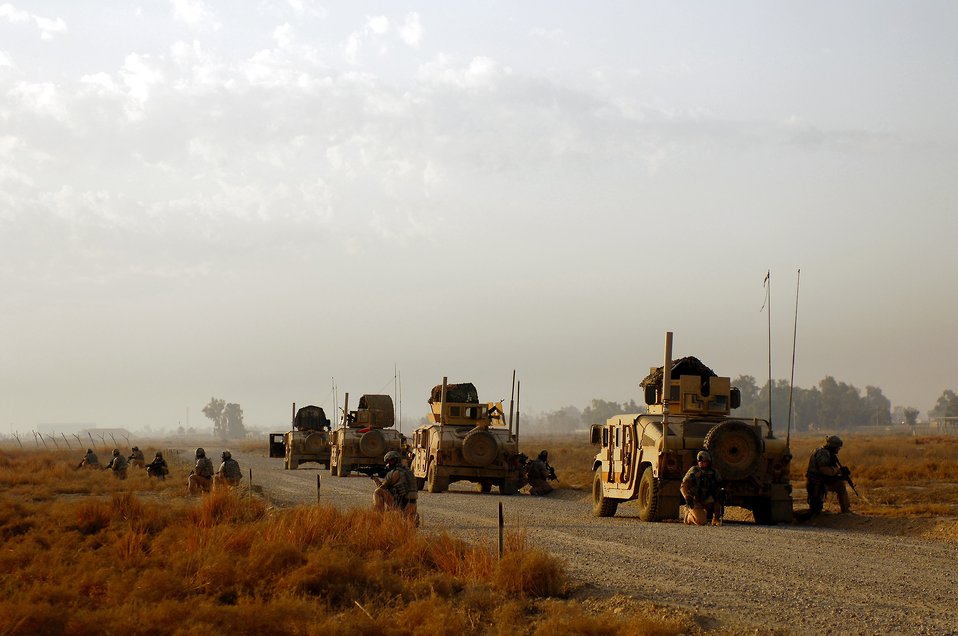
Getting ready to go on the road

Air Force security forces Airmen perform a dry run of rollover drills March 3 prior to a patrol in the southwest area of Baghdad, Iraq. The Airman are assigned to Detachment 3 of the 732nd Expeditionary Security Forces Squadron at Sather Air Base, Iraq.